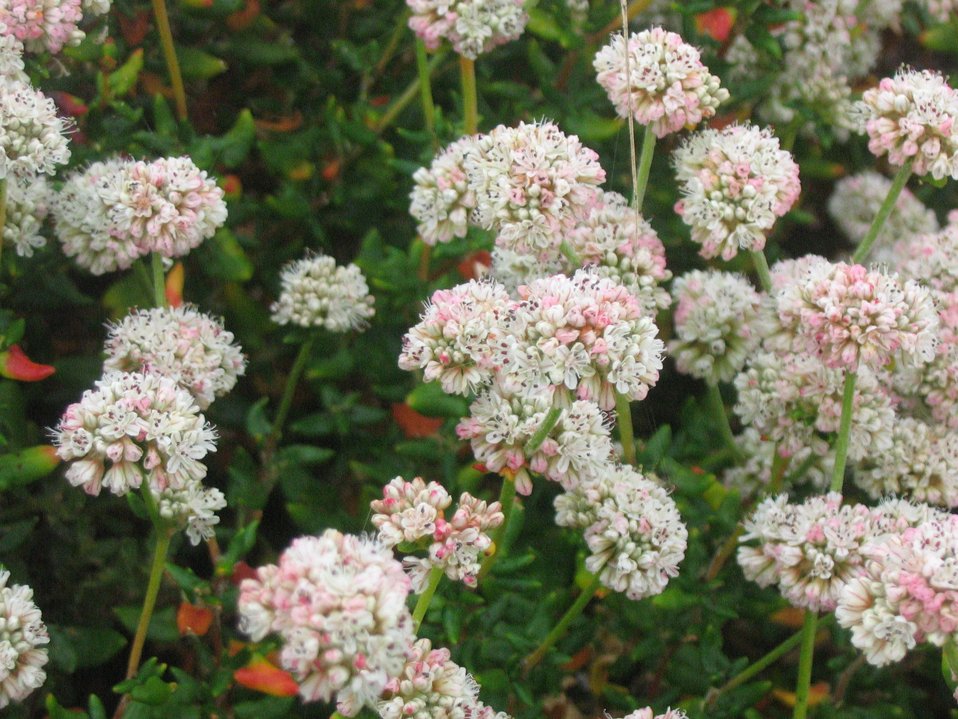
Dune buckwheat flowers (Eriogonum parvifolium)